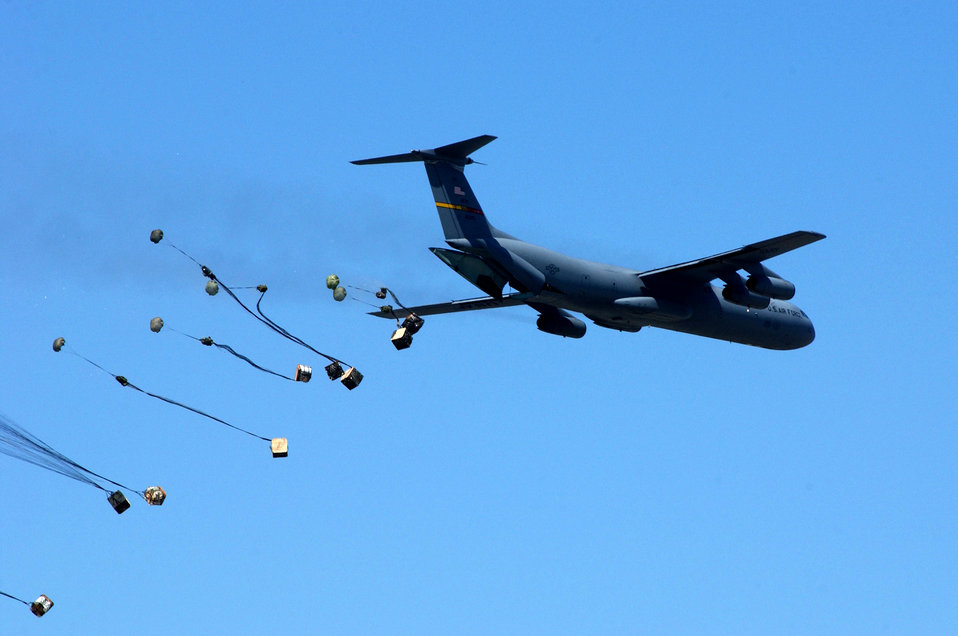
Cargo drop demo

OVER MARCH AIR RESERVE BASE, Calif. -- A C-141 Starlifter demonstrates its capabilities by air dropping containers during Airfest 2004 here April 24. Airfest 2004 featured both military and civilian aerial and ground demonstrations during the two-day air show here April 24-25.